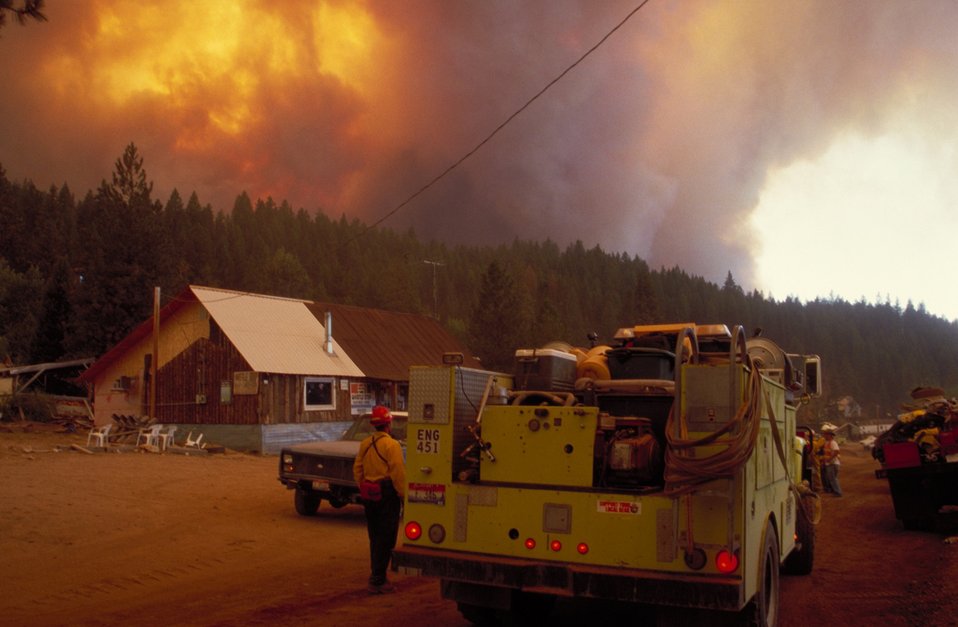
Urban interface Fire coming Fire Season 2000 Lower Snake River District LSRD